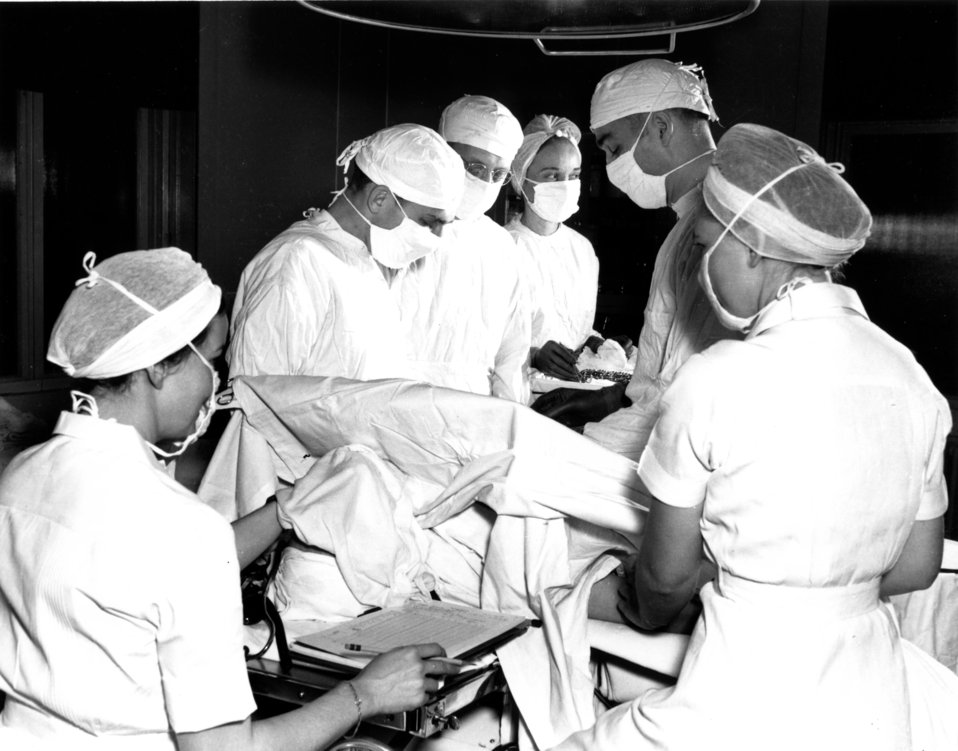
Medical at Oak Ridge